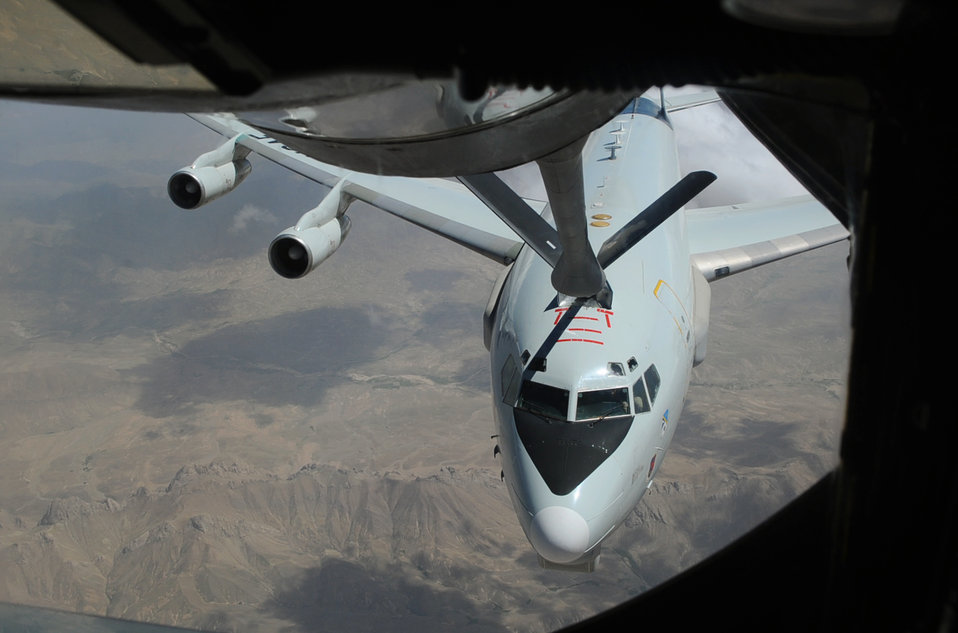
Tanker operation

An E-3 Sentry receives fuel from a 340th Expeditionary Air Refueling Squadron KC-135 Stratotanker May 25, 2010, while flying over Afghanistan.